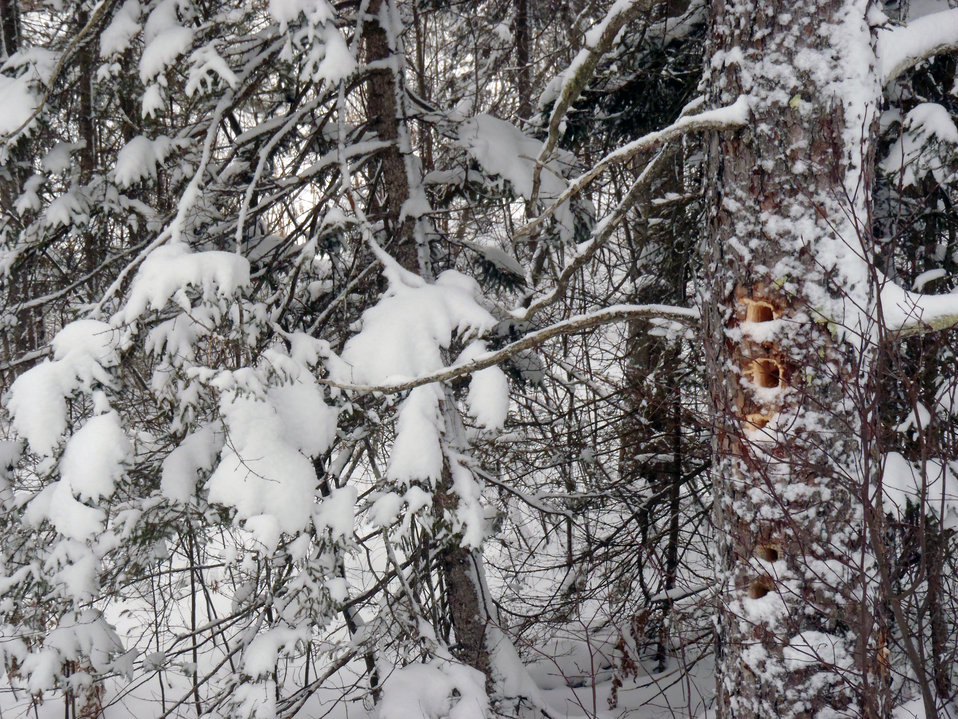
Winter Woodpecker Activity

Pileated woodpecker activity at Seney National Wildlife Refuge.